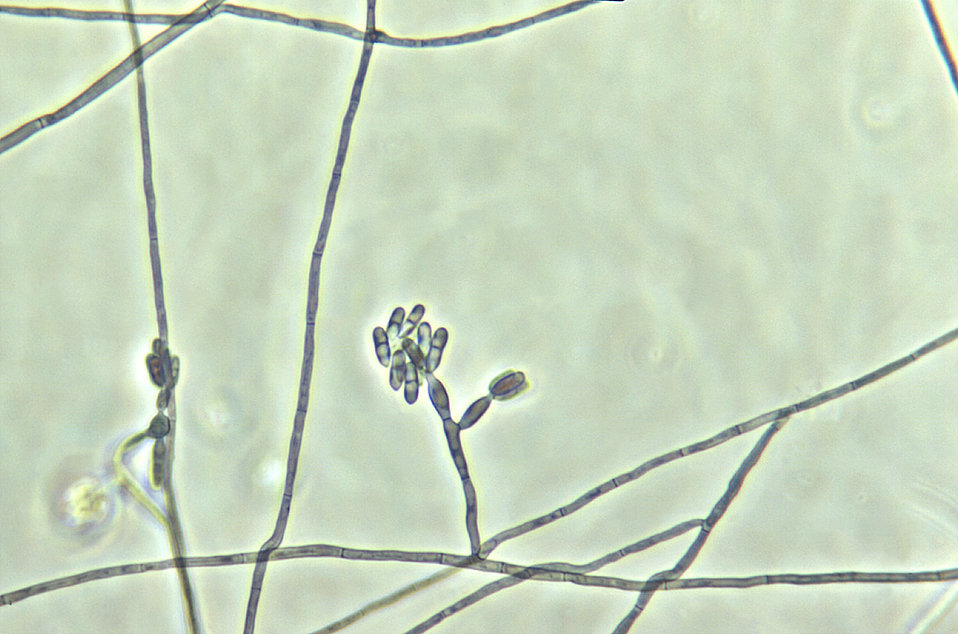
Magnified 500X, this photomicrograph reveals a conidiophore of Exophiala salmonis isolated from a Nigerian horse.